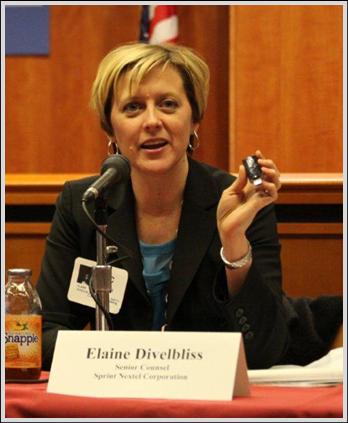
Elaine Divelbliss

Panel 4: Discussion of Industry Best Practices to Increase Broadband Adoption Among the Various Technologies